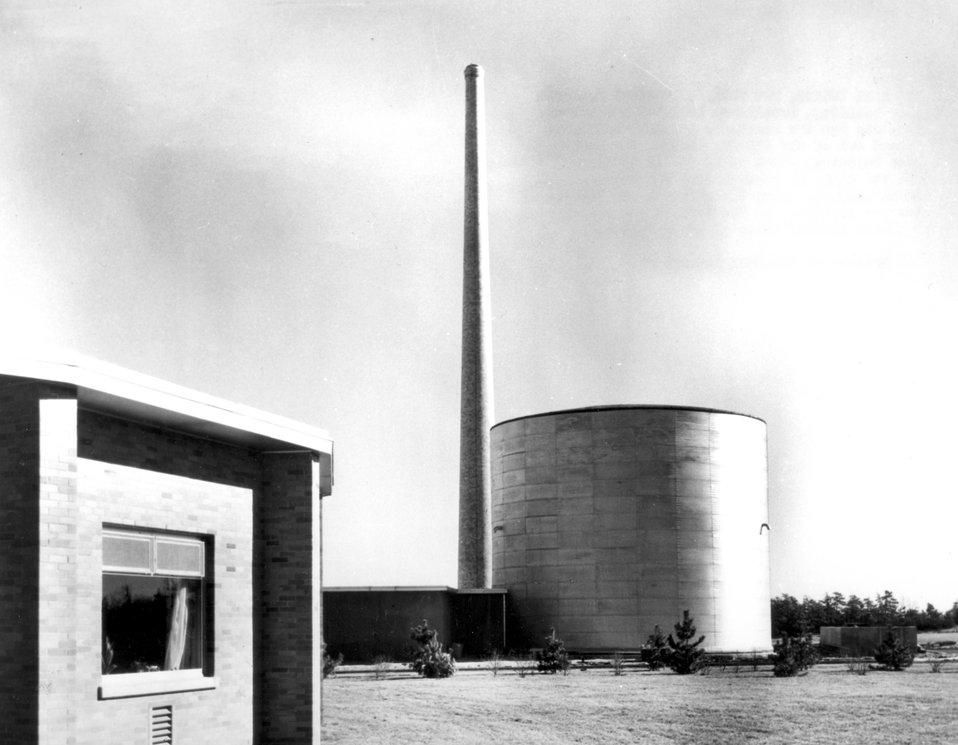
Medical research reactor building, Cooling air for the reactor's graphite reflector is forced out of the 150-foot stack. The steel reactor building, which is 60-feet in diameter and 54 feet high, is connected to the main medical research complex.
c.1960